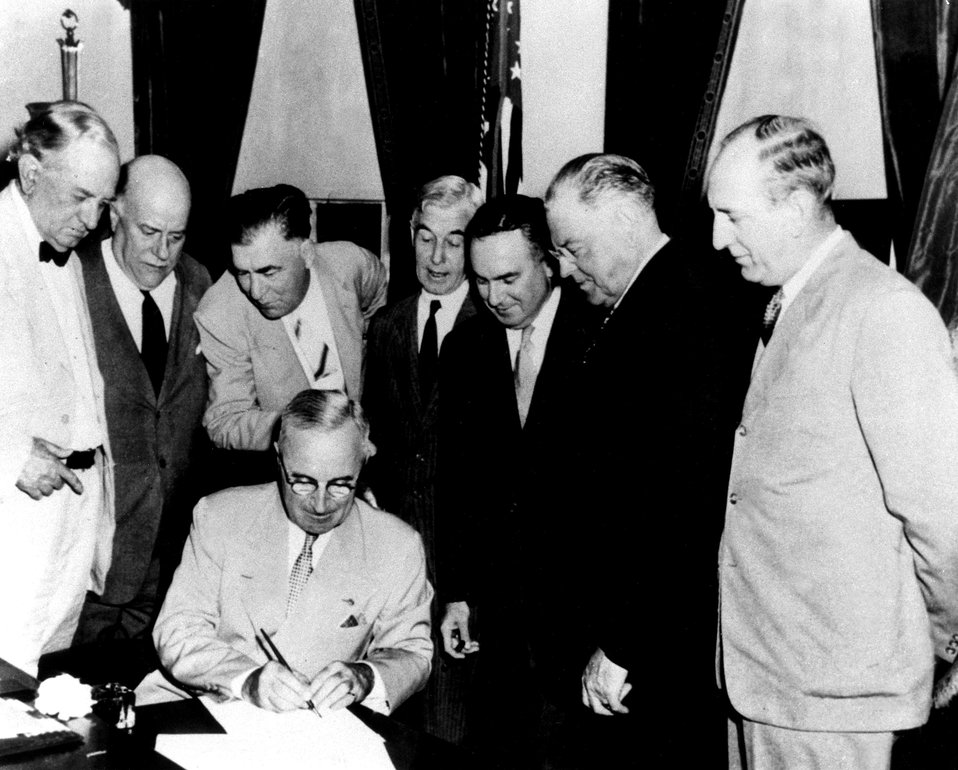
On August 1, 1946, President Harry S Truman signed the bill creating the U.S. Atomic Energy Commission